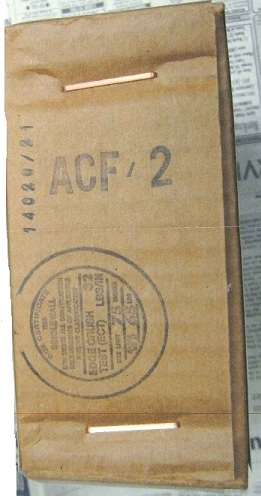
RECALLED - Cat Food

April 9, 2014 - Product Recall - The Robert Abady Dog Food Co., LLC Recalls 'Abady Highest Quality Maintenance & Growth Formula for Cats' Because of Possible Health Risk.